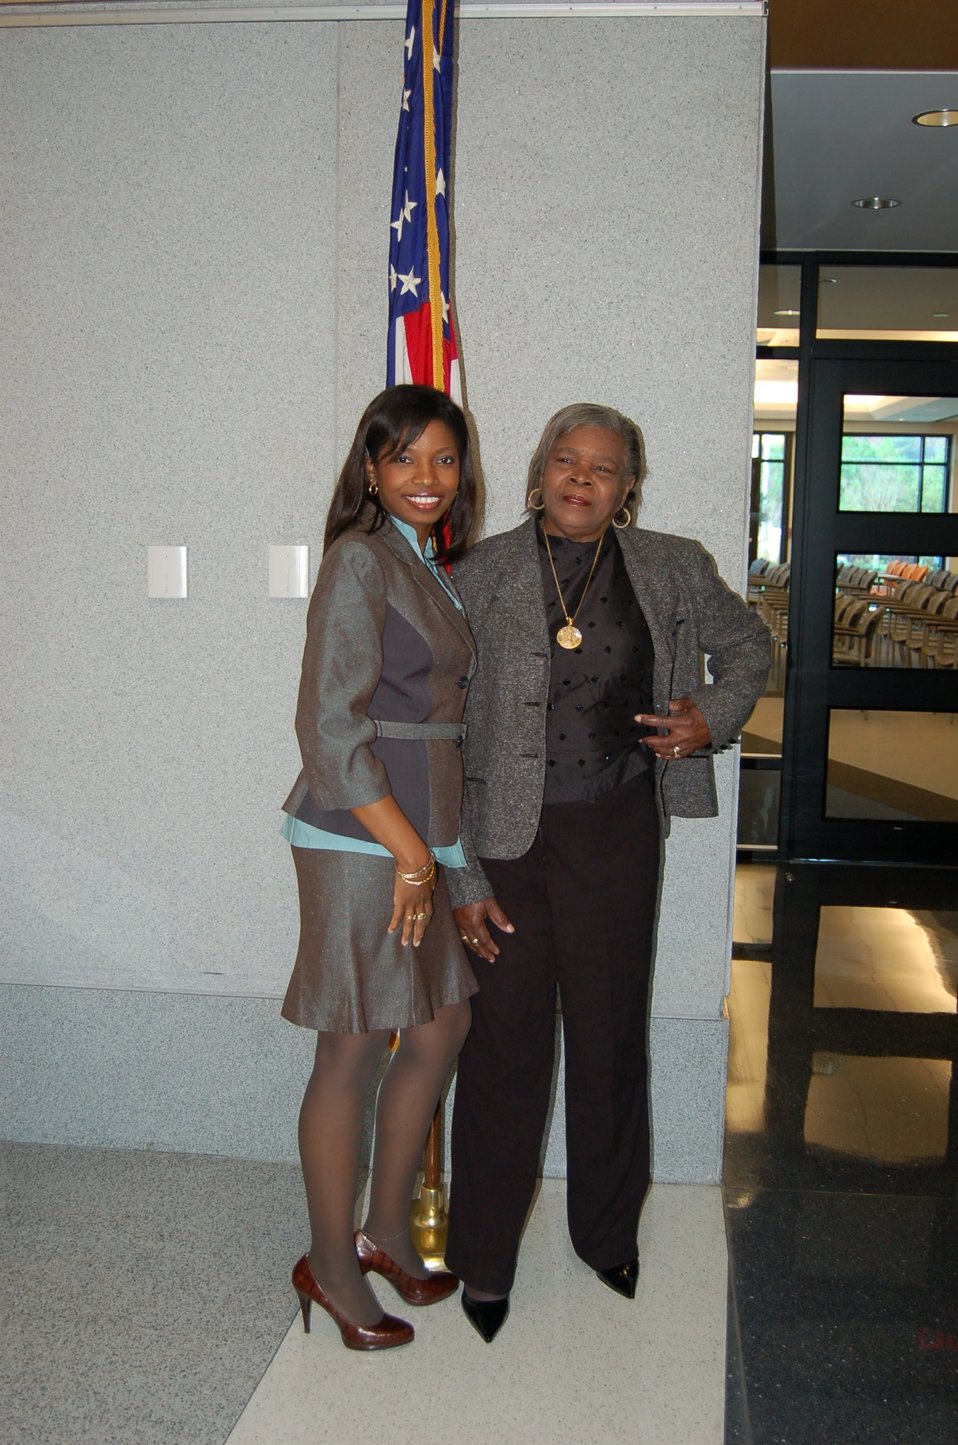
New Citizens